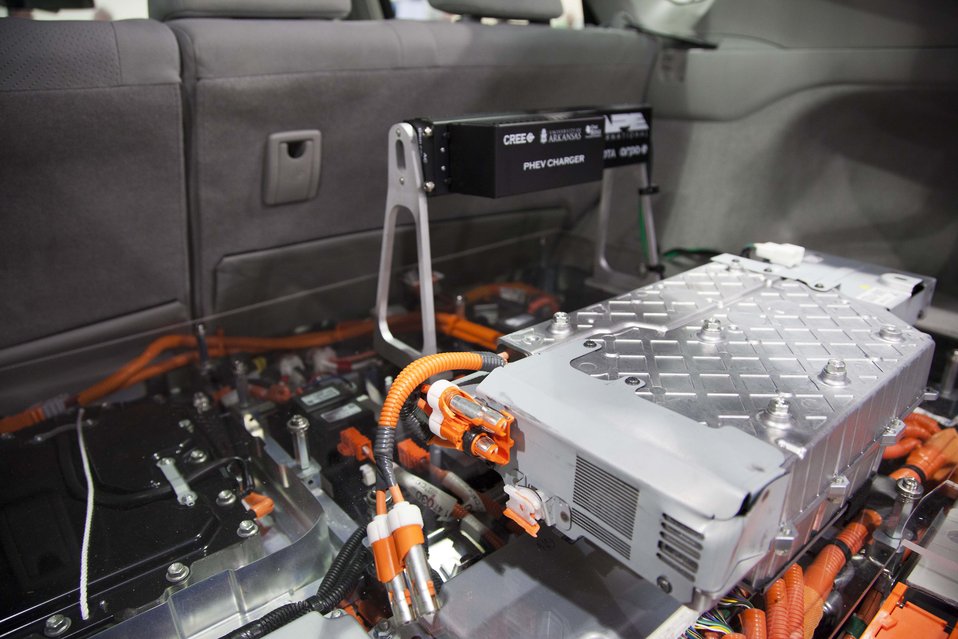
As part of a demonstration project with Toyota, Arkansas Power Electronics International, Inc. (APEI) displays its on-board electric vehicle charger prototype in a Prius Plug-In. By using silicon carbide-based power converters, APEI developed a charger (the black raised object pictured in the photo) that is 6-7 times smaller and charges the car 3 times faster compared to current on-board vehicle chargers (the silver object in the front).